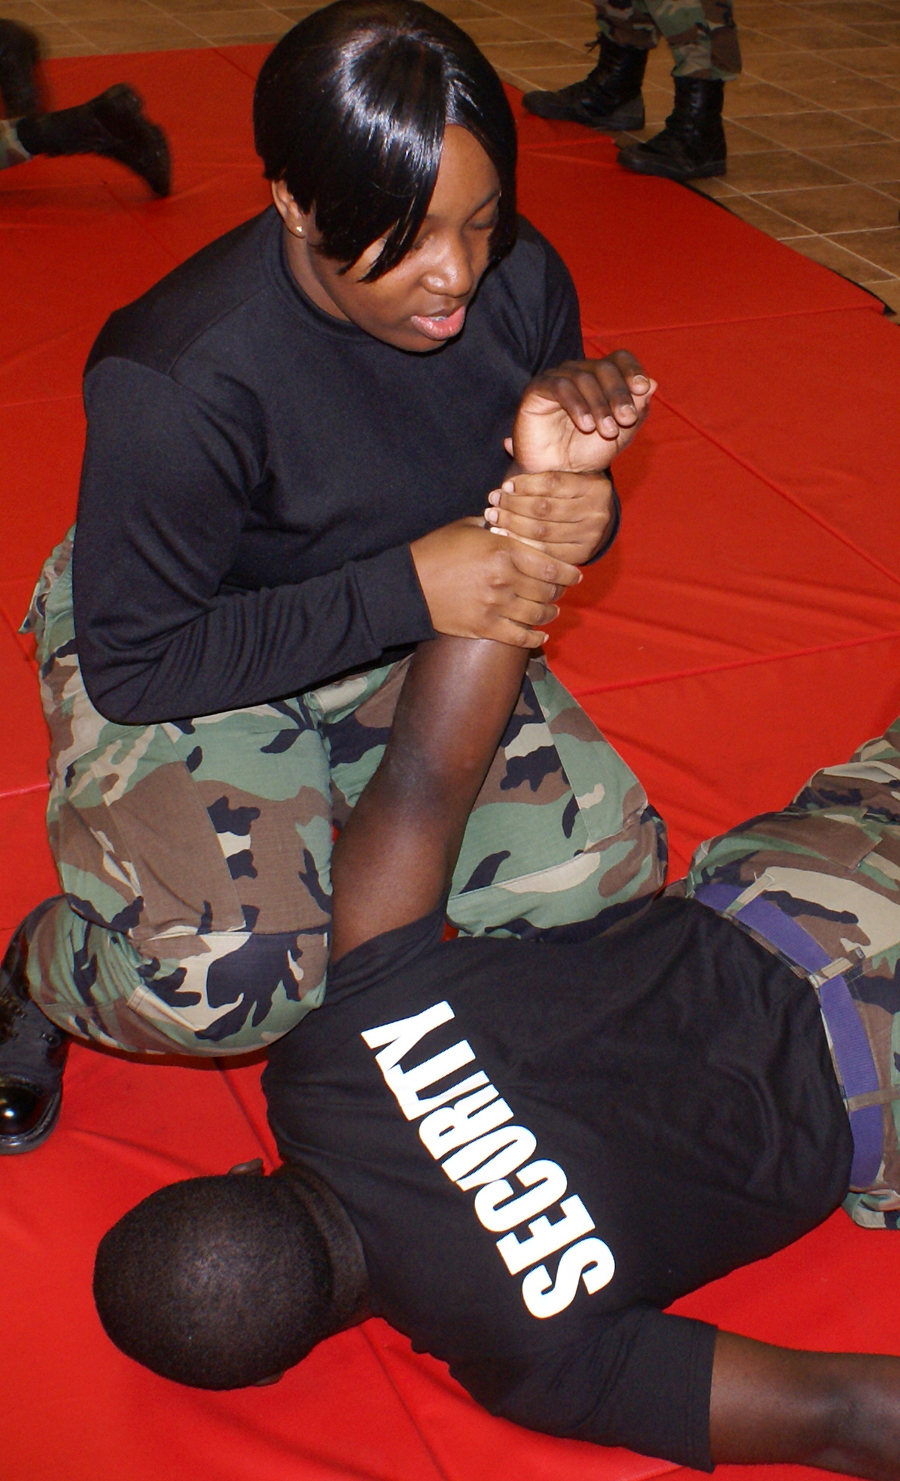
Security forces unarmed defensive tactics

Staff Sgt. Vickie Pearson takes down Airman 1st Class Sylvain Michael using the bar hammer lock, an unarmed defensive tactic taught during a training scenario Feb 10. at Homestead Air Reserve Base, Fla. Both are assigned to the 482nd Security Forces Squadron.